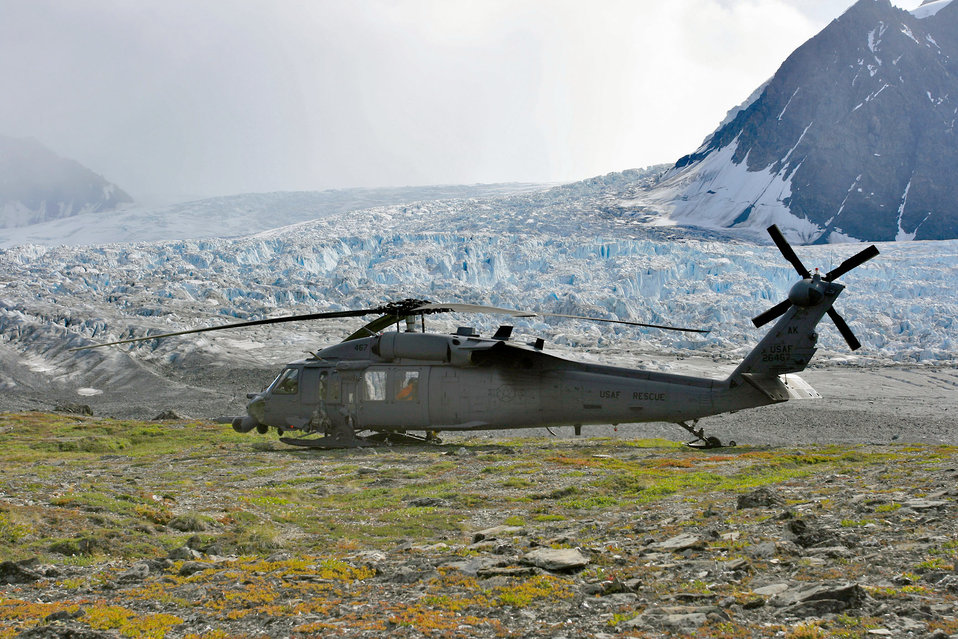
Alaska Guard

An Alaska Air National Guard HH-60 Pave Hawk waits for the weather to clear before making another attempt to reach the survivors of a plane crash Aug. 8, 2010, five miles from the Knik Glacier crash site.